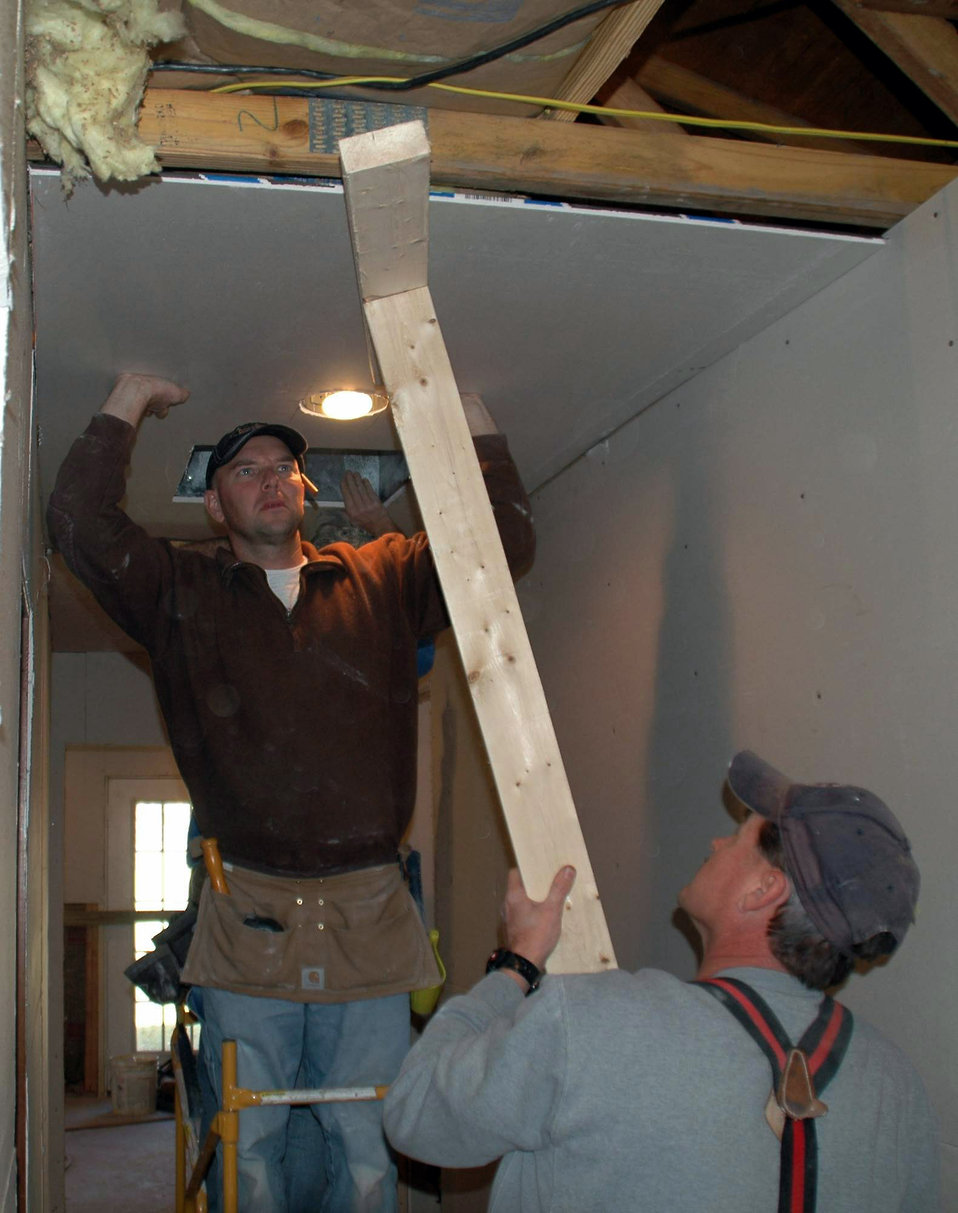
Charleston members aid injured Airman

Master Sgts. Shawn Delp and Peter Shovey install sheetrock in a newly widened hall at the home of Master Sgt. Don Eagle in December in Charleston, S.C. Members of Charleston Air Force Base worked on Sergeant Eagle's house since November to make it handicap accessible. Sergeant Eagle was struck by a motorist as he drove his motorcycle home in April 2008, and he is currently a paraplegic. Sergeants Delp and Shovey are assigned to the 300th Airlift Squadron.